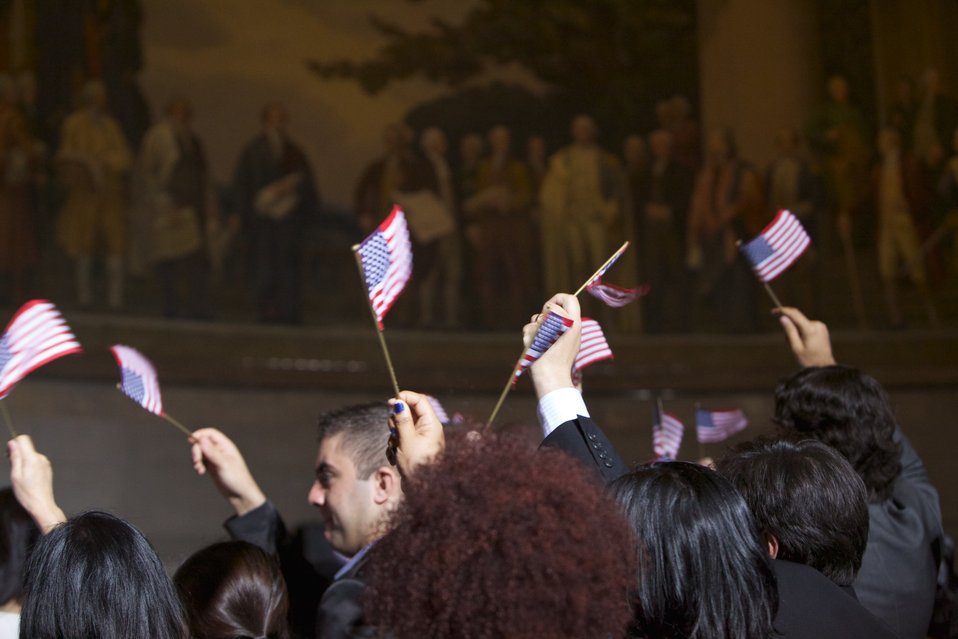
Naturalization Ceremony with Michelle Obama